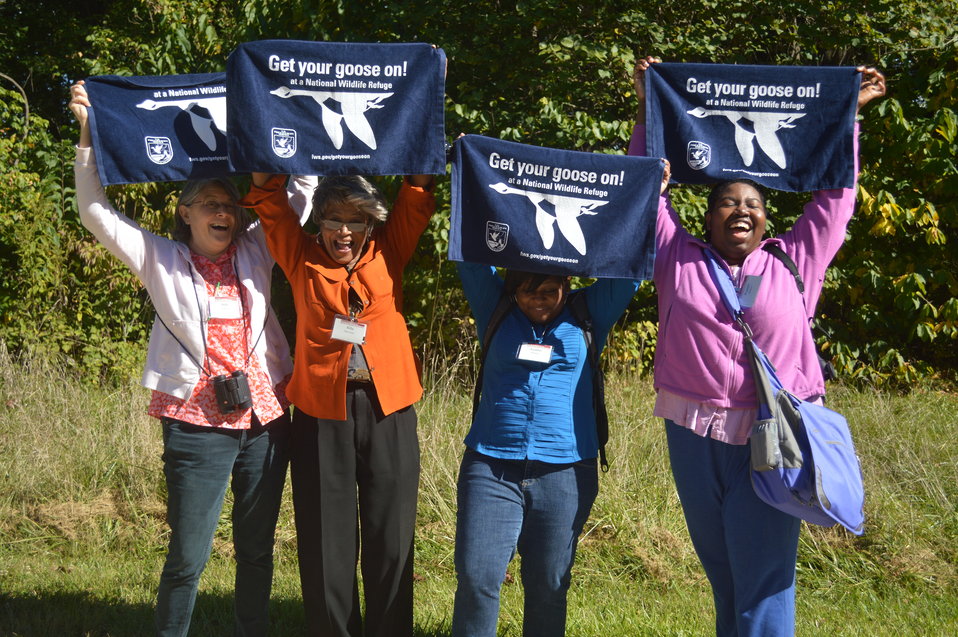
Get Your Goose On!

Photo taken at the National Conservation Training Center in Shepherdstown, WV.

Credit: Ryan Moehring / USFWS

#GetYourGooseOn